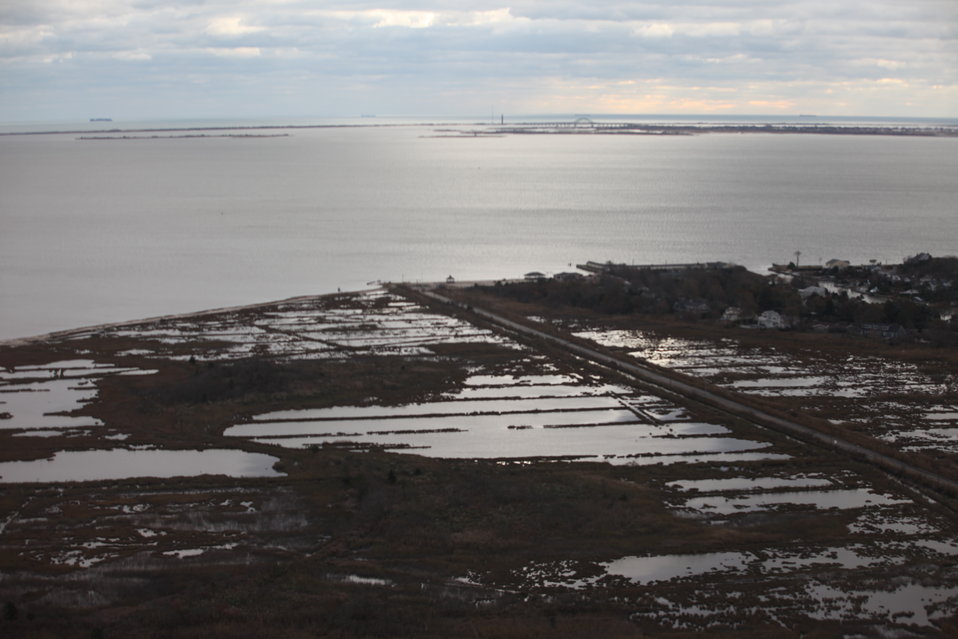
Aerial view of Seatuck National Wildlife Refuge (NY)

An aerial view of Seatuck National Wildlife Refuge, part of the Long Island National Wildlife Refuge Complex, in the aftermath of storm Sandy.